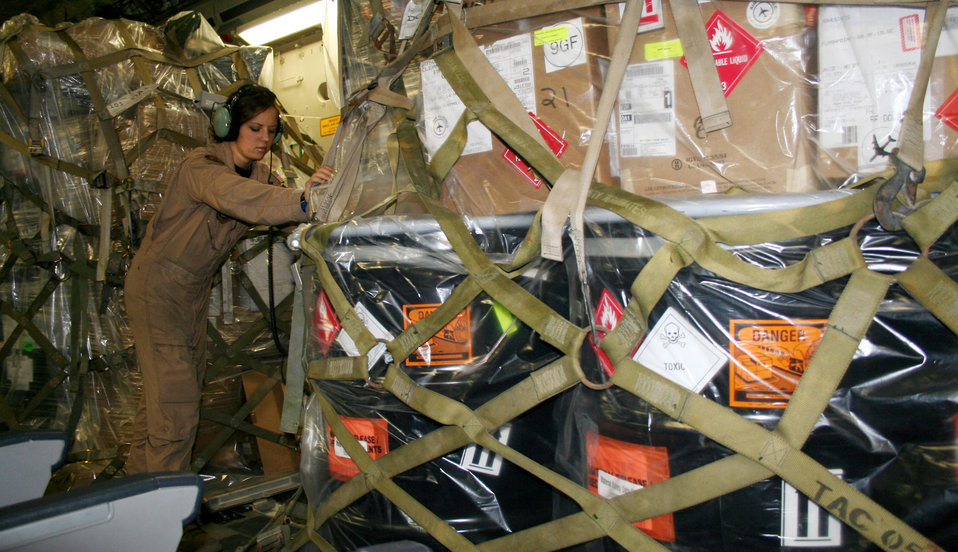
C-17 crews deliver in Central Asia

Airman 1st Class Suzanne Van Elk gets a pallet rolling for download from a C-17 Globemaster III at Manas Air Base, Kyrgyzstan. When cargo includes hazardous material, like the volatile methanol on this pallet, loadmasters plan the cargo load around it, keeping incompatible cargo away. Airman Van Elk is deployed from McChord Air Force Base, Wash.